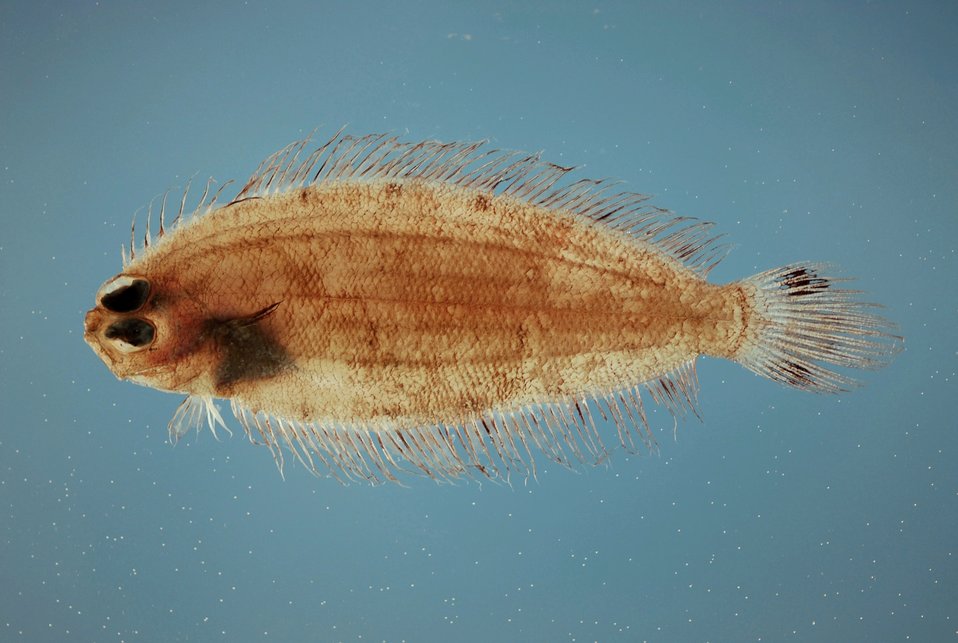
Deepwater dab ( Poecilopsetta beanii )